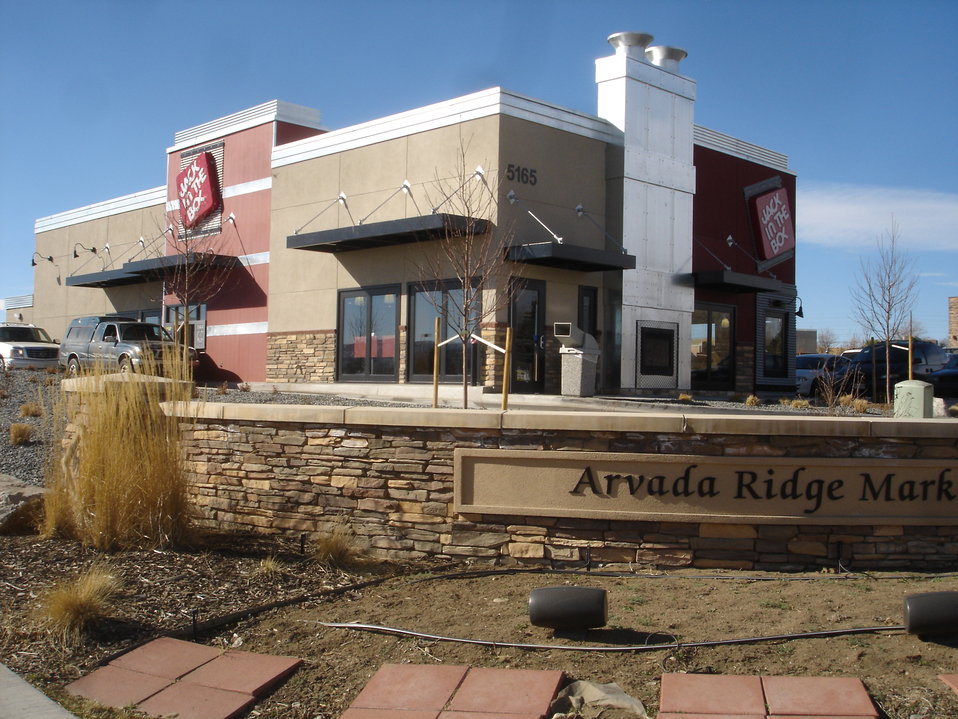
JackInTheBox, Arvada, CO
Jmy007 picture